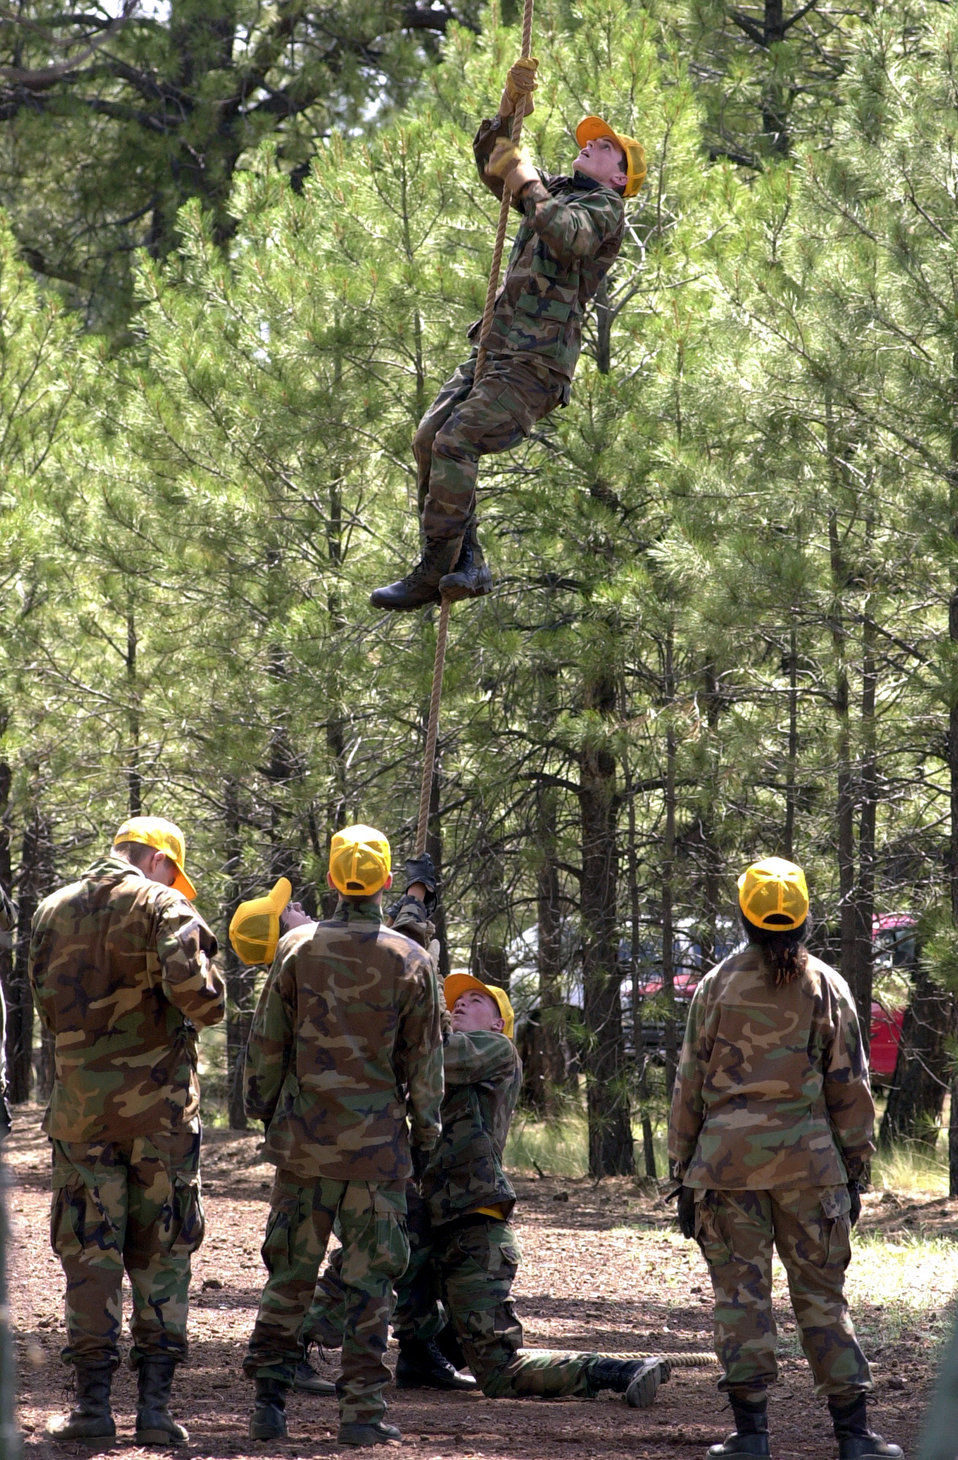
Up the line

CAMP NAVAJO, Ariz. -- Air Force junior ROTC cadets climb a rope at the confidence course competition during Air Force JROTC Summer Leadership School here Aug. 3. Airmen from the 56th Fighter Wing at Luke Air Force Base, Ariz., assisted in training 140 high school cadets from Dobson, Desert Ridge, Mesa, Peoria and Westwood high schools.